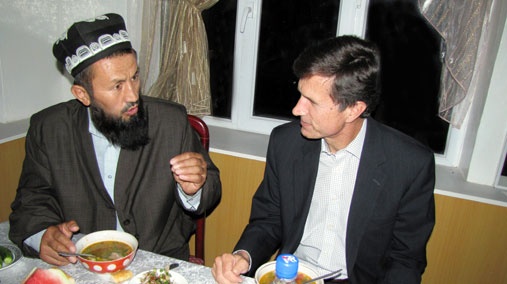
Assistant Secretary Blake Attends an Iftar in Tajikistan

U.S. Assistant Secretary of State for South and Central Asian Affairs Robert O. Blake attends an iftar hosted by Domullo Sayido, the Imam Khatib of the Varzob Central Mosque in Dushanbe, Tajikistan, in September 2010.